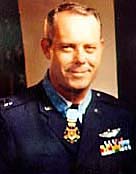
Lieutenant Colonel Gerald O. Young

1960's -- Gerald O. Young entered the Air Force at Colorado Springs, Colo. His 60th mission would result in his earning a Medal of Honor.